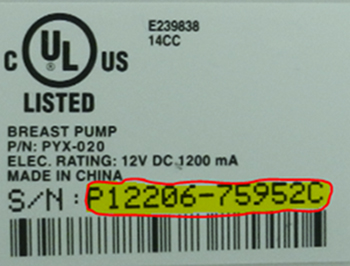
RECALLED – AC/DC power adapters used with breast pum

March 18, 2014 – Product Recall – Playtex Announces the Voluntary Nationwide Recall of Certain AC/DC Power Adapters Used With the Playtex® Nurser Deluxe Double Electric Breast Pump Due to Potential for Electric Shock.